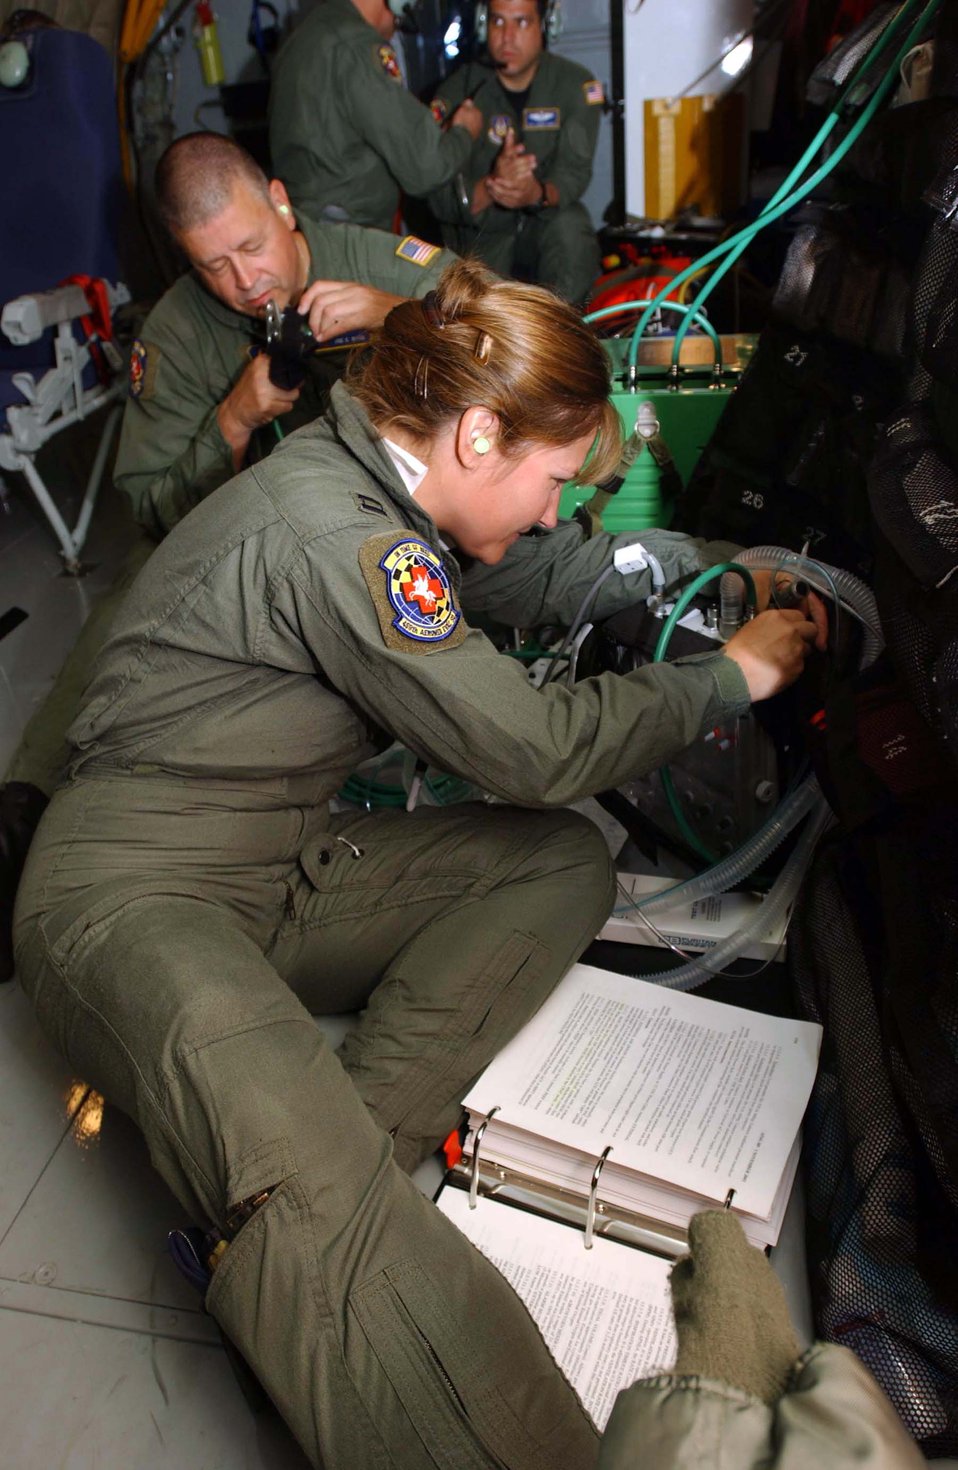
Reserve nurse saves life of commissary employee

Maj. Heather Everly (shown as a captain) helped save a life at the base commissary Feb. 16, 2010, at Joint Base Andrews, Md. Major Heatherly is a traditional reservist and a flight nurse in the 459th Aeromedical Evacuation Squadron at JB Andrews.